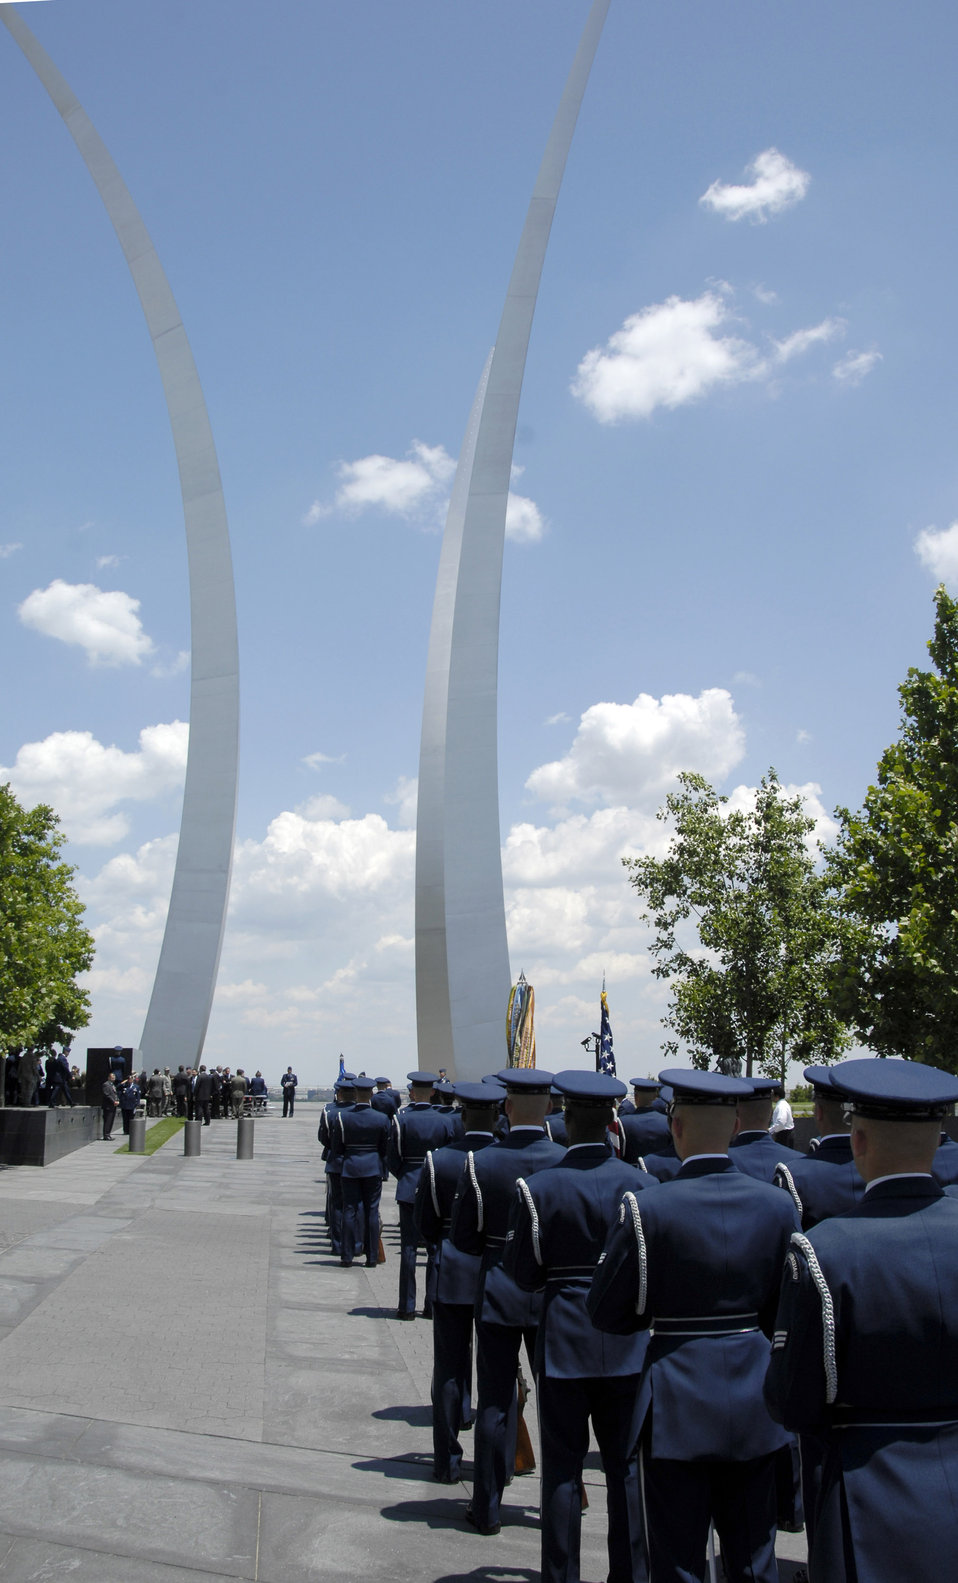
SECAF salutes Airmen during ceremony

The United States Honor Guard stand by for the arrival of the official party during a ceremony in honor of Secretary of the Air Force Michael W. Wynne at the U.S. Air Force Memorial, Arlington, Va., June 20. Secretary Wynne is the Air Force's 21st secretary.